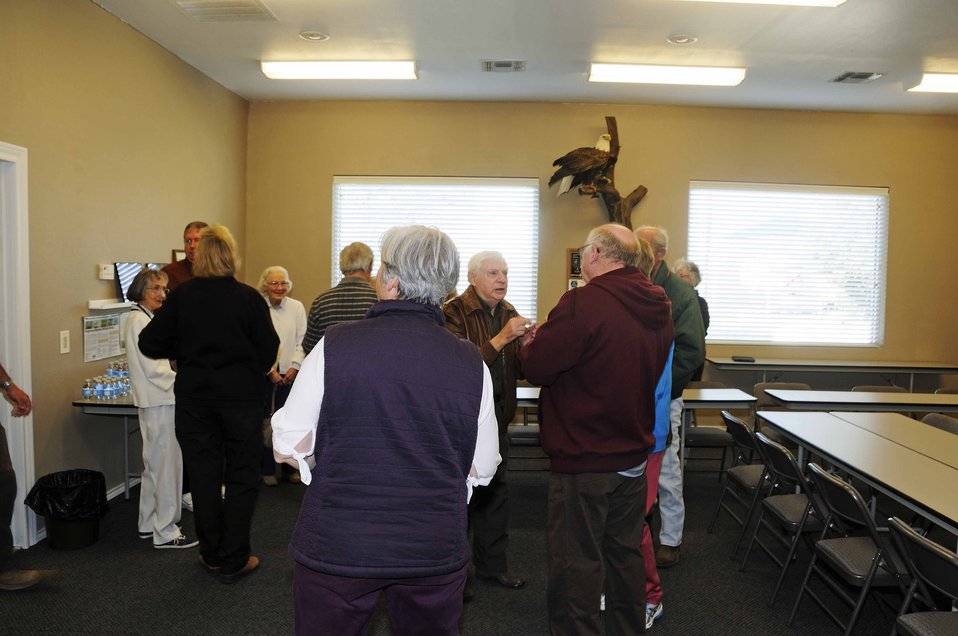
Karl visiting with friends

Karl Haller catches up with old friends who came to Hagerman Refuge to honor him for his 50 years of service.